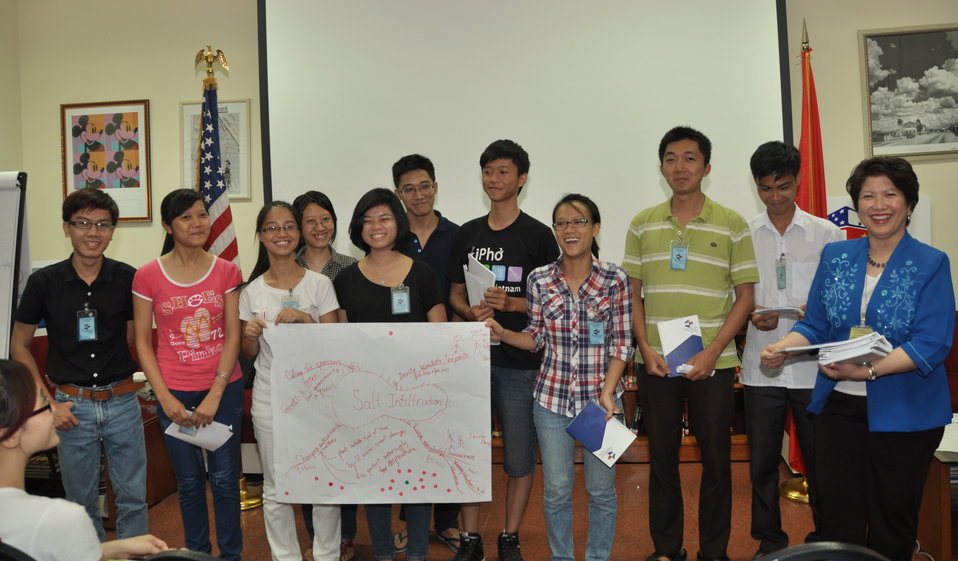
Climate Change Talk at the American Center

Hanoi, May 28, 2013.